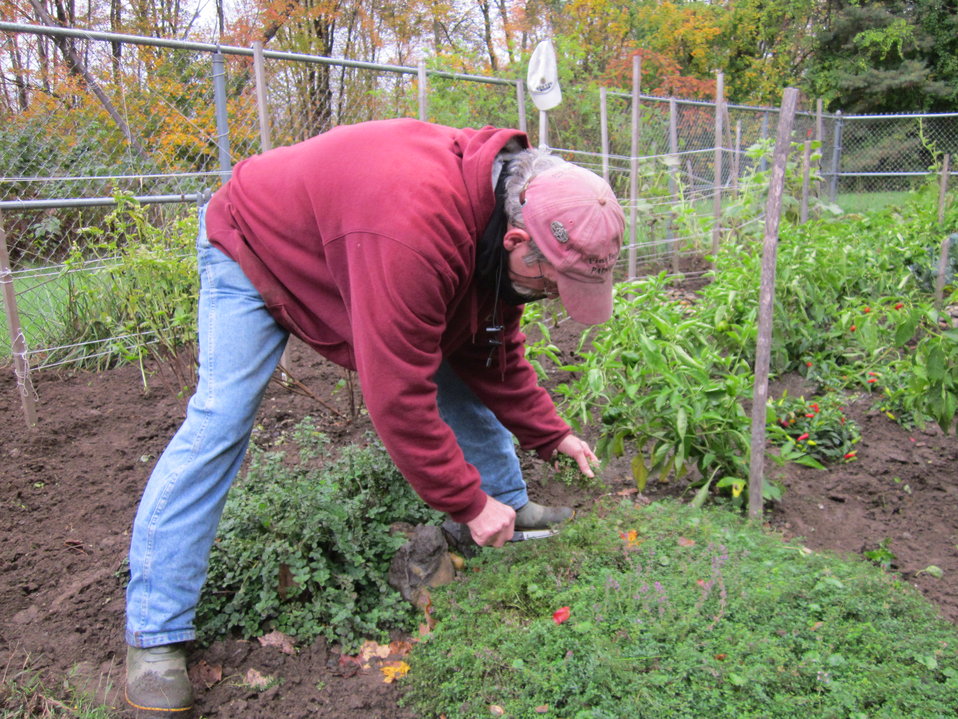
Thyme to harvest

October 12, 2012, Sunderland, MA: Volunteer Bob O'Neil clips thyme and oregano from the garden he keeps at the U.S. Fish and Wildlife Service's Richard Cronin National Salmon Station. Bob, a veteran of Vietnam and retired U.S. postal, donates his time to grow the garden and donate yields to local veterans.